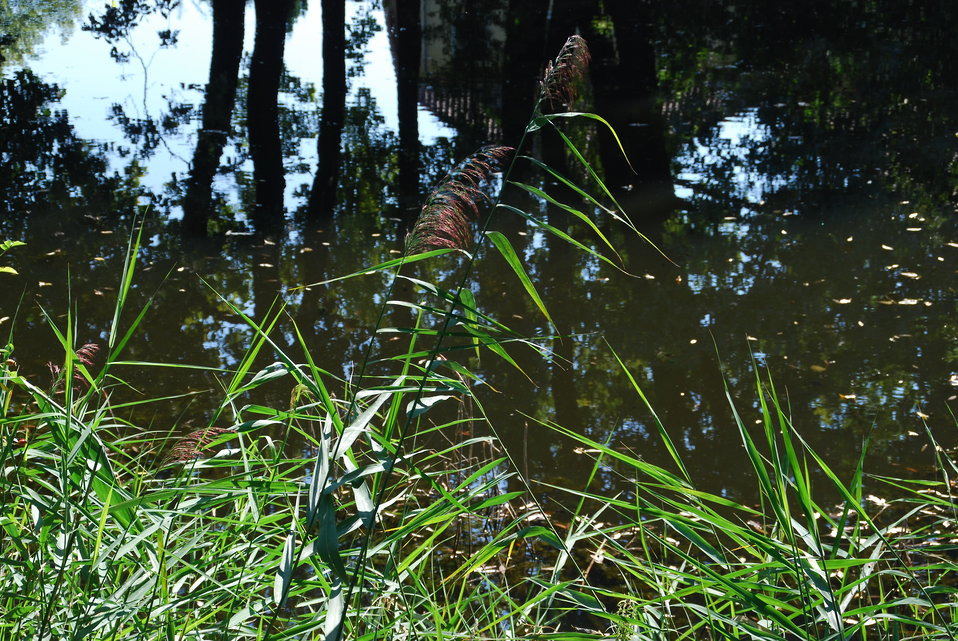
Deutsch: Theaterteich in Frankfurt (Oder), am ehemaligen Kleist-Theater, Friedrich-Ebert-Straße